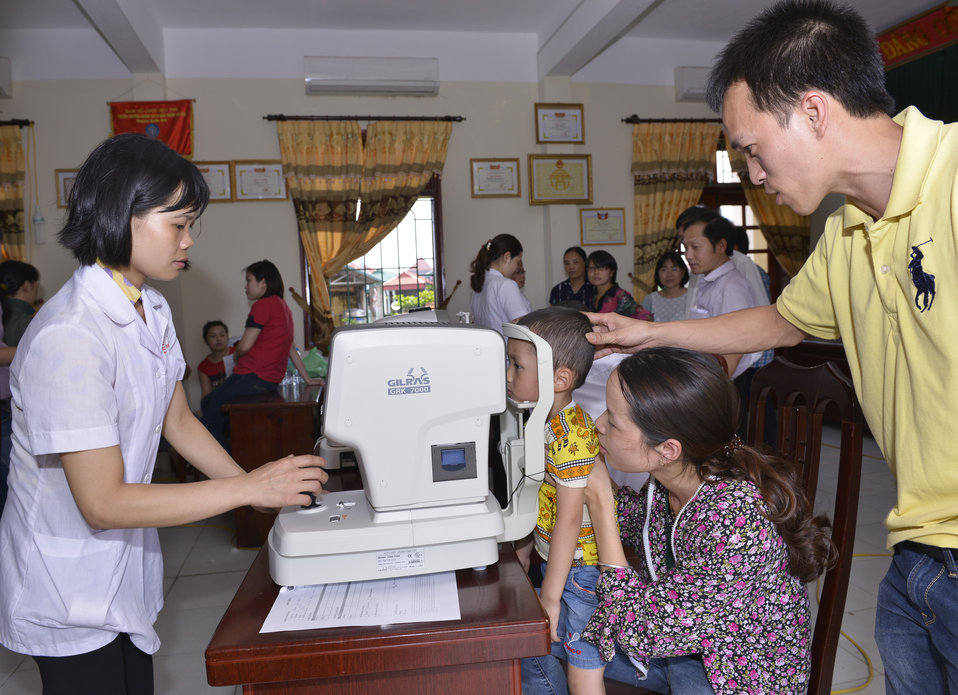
Eye screening for kindergarten children in Quoc Oai district of Hanoi

Quoc Oai, Hanoi. May 31, 2014.